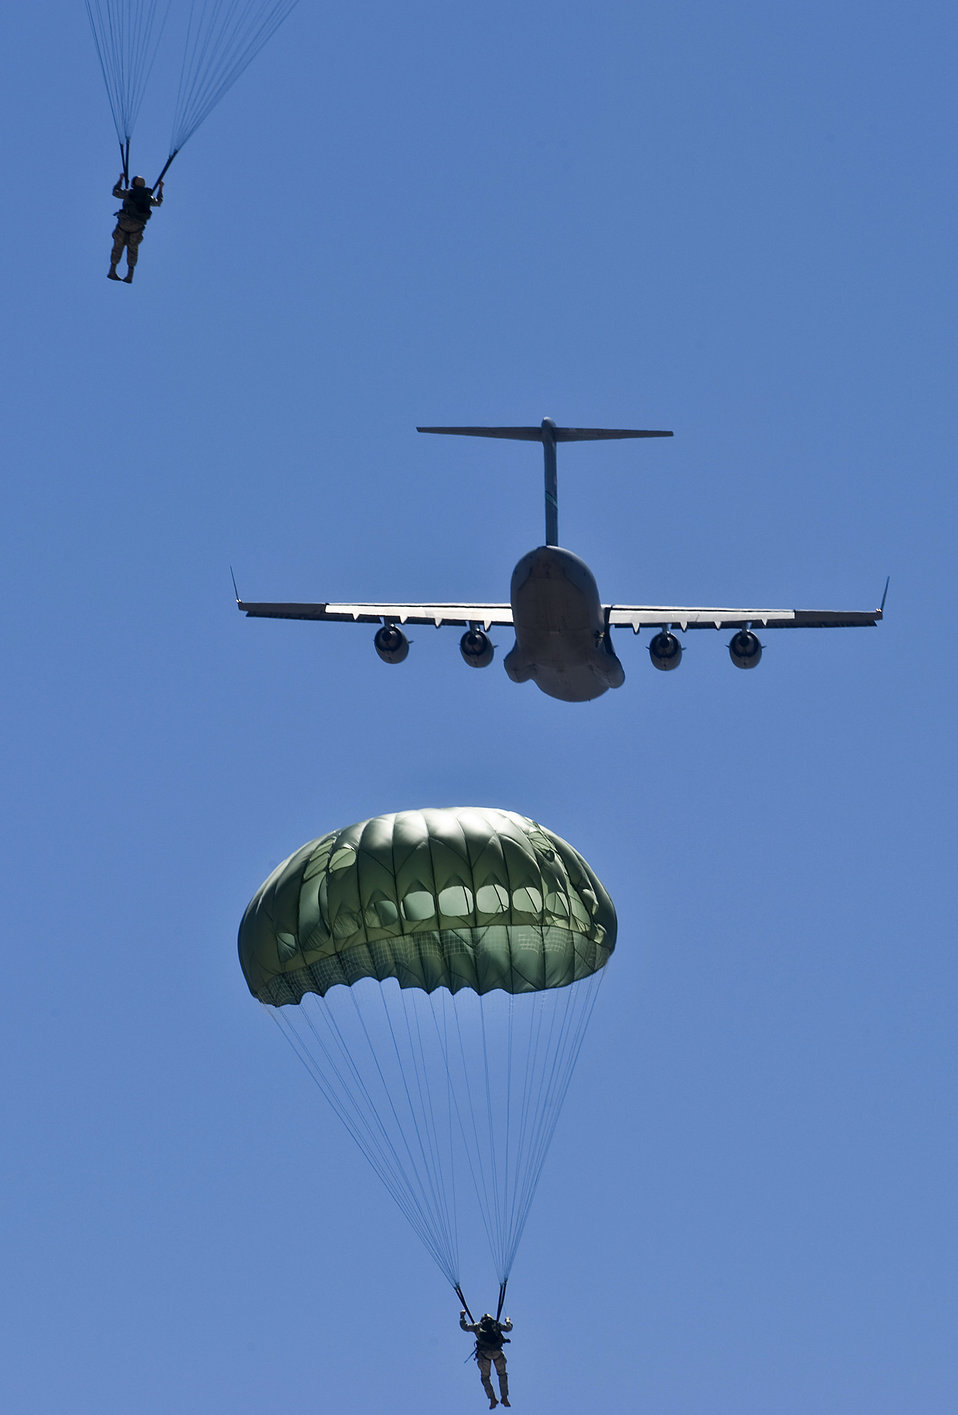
One sweet ride

Airmen jump from a C-17 Globemaster III May 12, 2011, during a training exercise above Alamo, Nev.